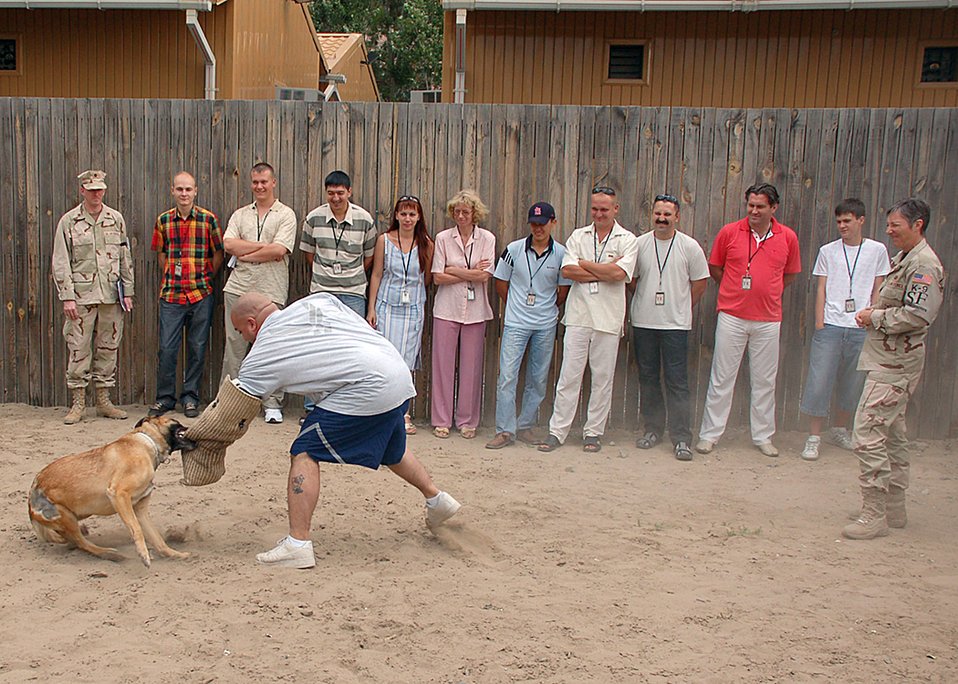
Kyrgyz controllers view Manas sky from the ground

Maj. Michael Smith and controllers from Kyrgyz Air Navigation watch as Rico demonstrates how he stops a potential suspect from escaping during a July 16 visit of Manas Air Base, Kyrgyzstan. Major Smith is the 376th Expeditionary Operations Support Squadron commander, and Rico is a 376th Expeditionary Security Forces Squadron military working dog. Staff Sgt. Jorge Davila, a 376th ESFS dog handler, was the decoy during the demonstration.